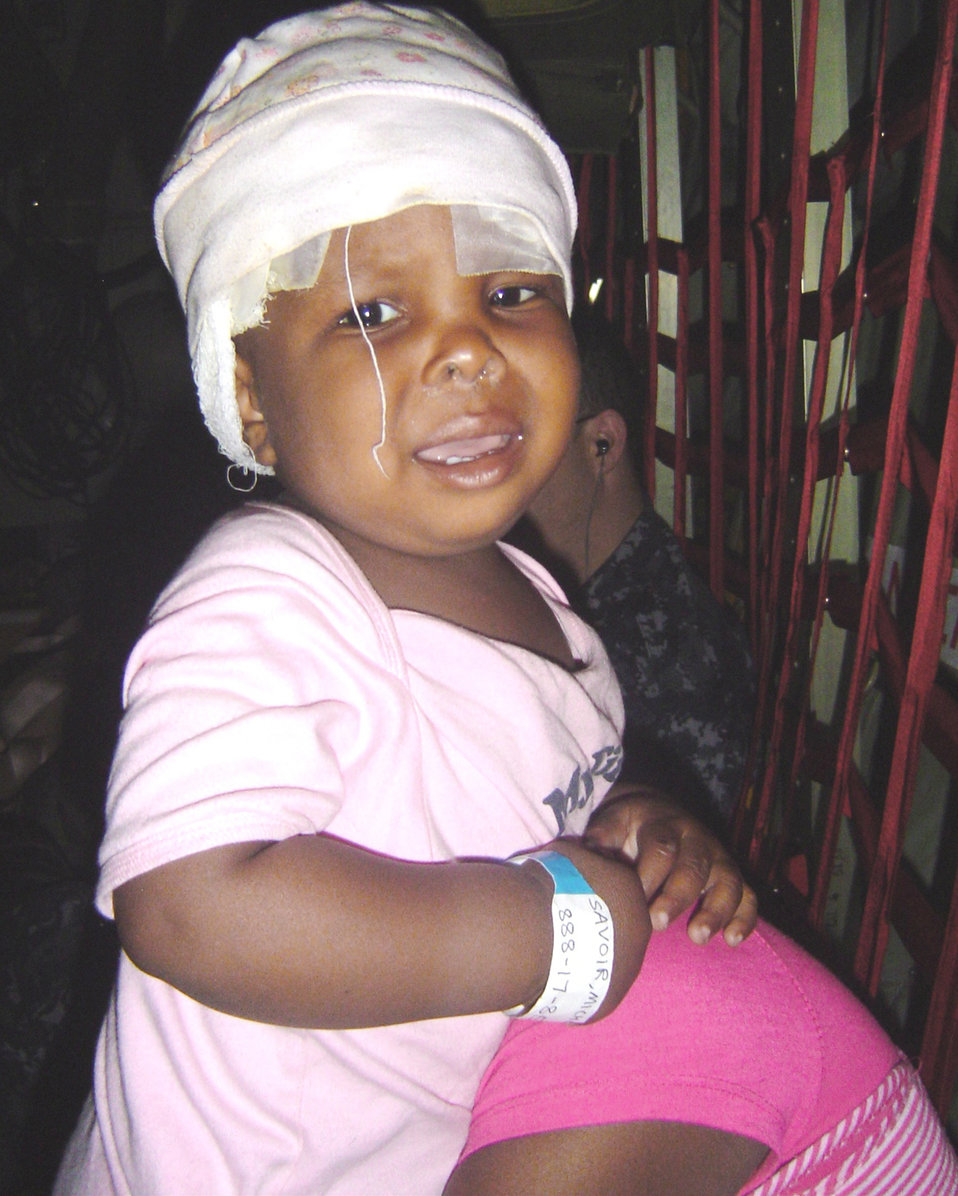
Keesler medical teams aid Haiti relief efforts

A 13-month-old girl with a skull fracture is transported on a C-130 Hercules Feb. 7, 2010, to a medical facility in the United States by a critical care air transport team from Keesler Air Force Base, Miss. Keesler AFB CCAT teams are providing medical care to victims of the Haiti earthquake who are airlifted to hospitals in the United States. Stephen Boskovich)